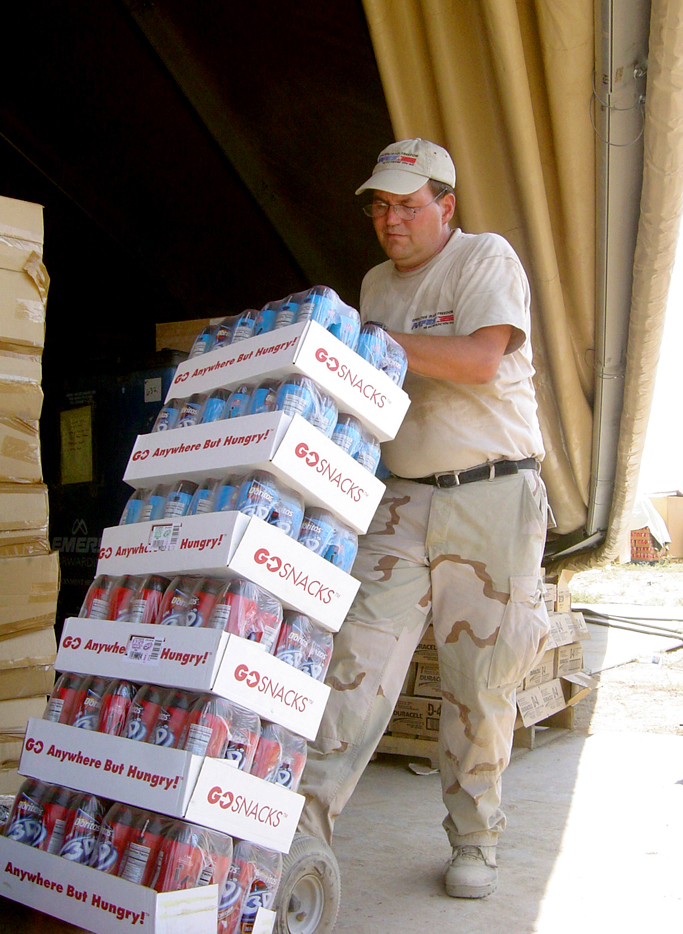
A BX far far away

KIRKUK AIR BASE, Iraq -- Tom Williams prepares to restock snacks in the base exchange here. He is an Army and Air Force Exchange Service sales area manager from Robins Air Force Base, Ga. Williams has been assigned here since June.